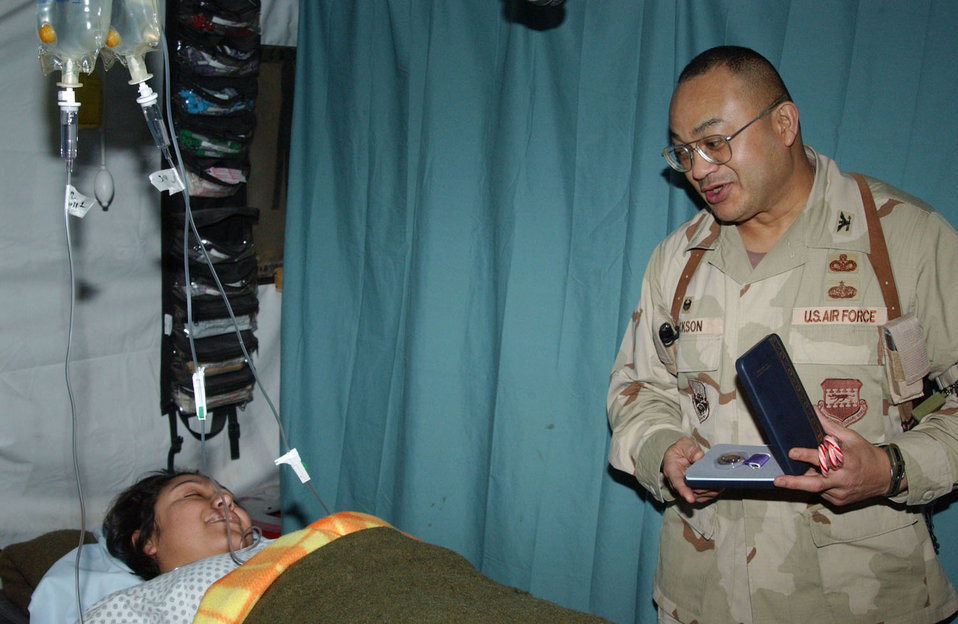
Airman receives 2 Purple Hearts

Staff Sgt. Aime Gaona receives a Purple Heart from Col. Larry Jackson for being struck by a sniper's bullet in her right femur Dec. 19 outside Kirkuk, Iraq. Sergeant Gaona is a weapons intelligence team member of the 732nd Expeditionary Civil Engineer Squadron, deployed from Luke Air Force Base, Ariz. Colonel Jackson is the 732nd Expeditionary Mission Support Group commander.